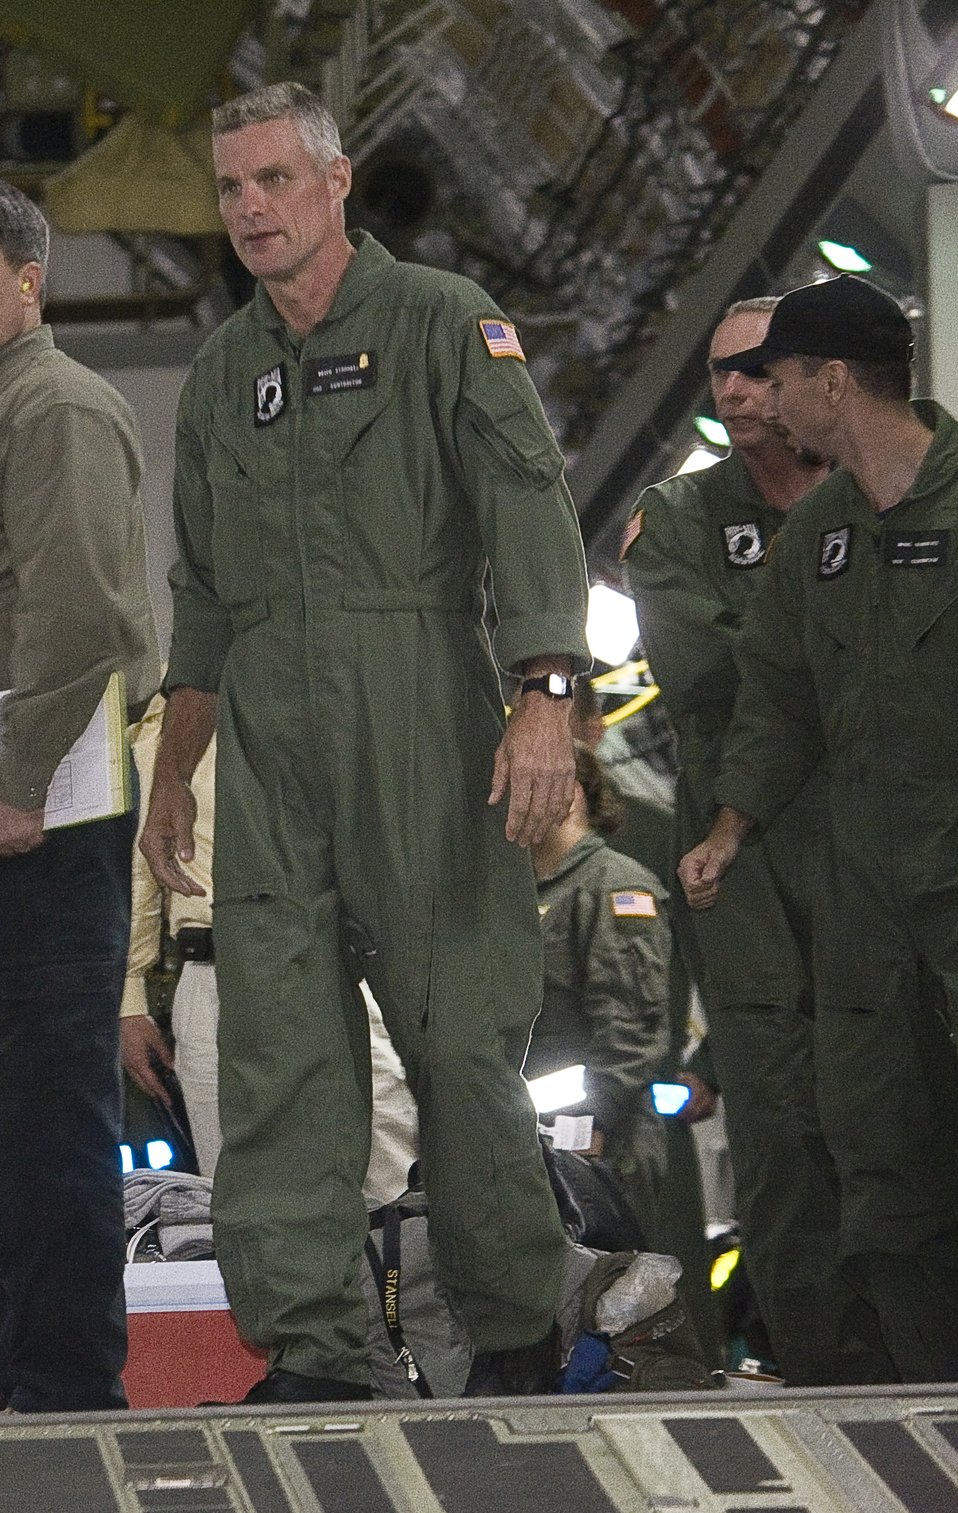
Hostages Arrive in U.S.

Keith Stansell stands at the top of the cargo ramp of a C-17 Globemaster III, shortly before stepping onto U.S. soil at Lackland Air Force Base, Texas, July 2. He was one of three U.S. contractors rescued after being held captive by a rebel group in Colombia for five years.